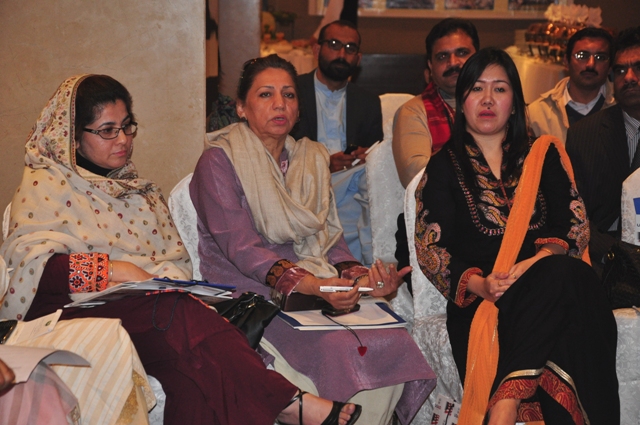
Education Workshop 269